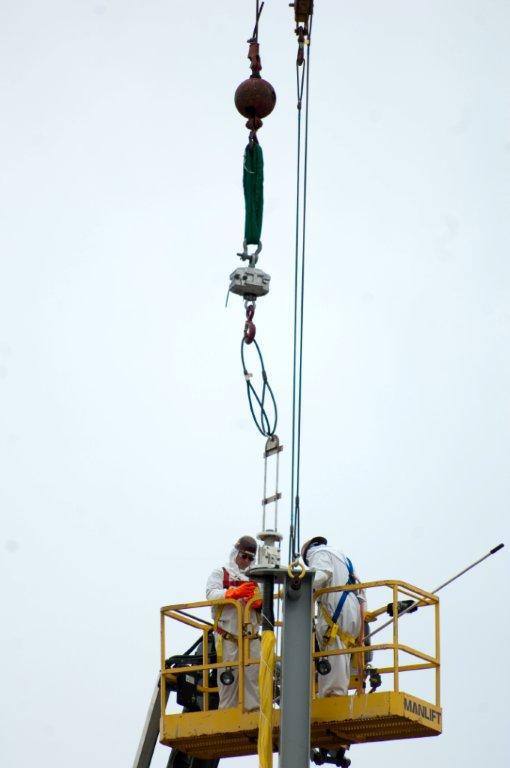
Corrosion probe installation

Two riggers use an aerial lift to install a new Recovery Act-funded corrosion probe into one of Hanford’s double-shell tanks. A corrosion probe is a 50-foot piece of pipe that contains sensors to provide a real-time measurement of tank waste chemistry and tank corrosion monitoring as an added level of protection to the environment.